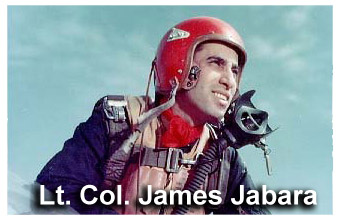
Lt. Col. James Jabara

On May 20, 1951, Lt. Col. James Jabara became the first jet ace by shooting down his fith MiG in combat.